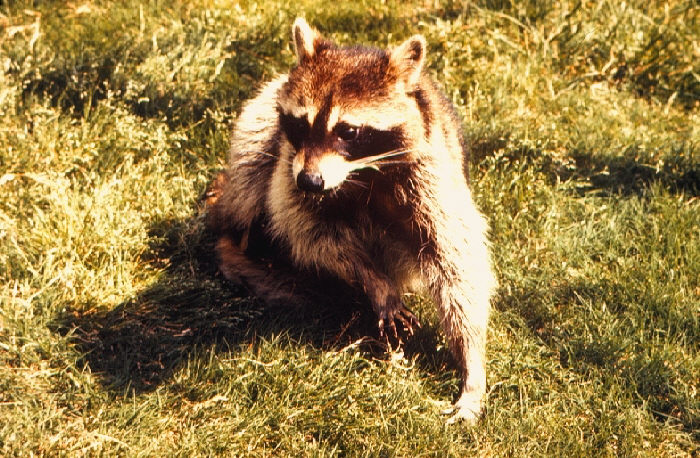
Raccoon.